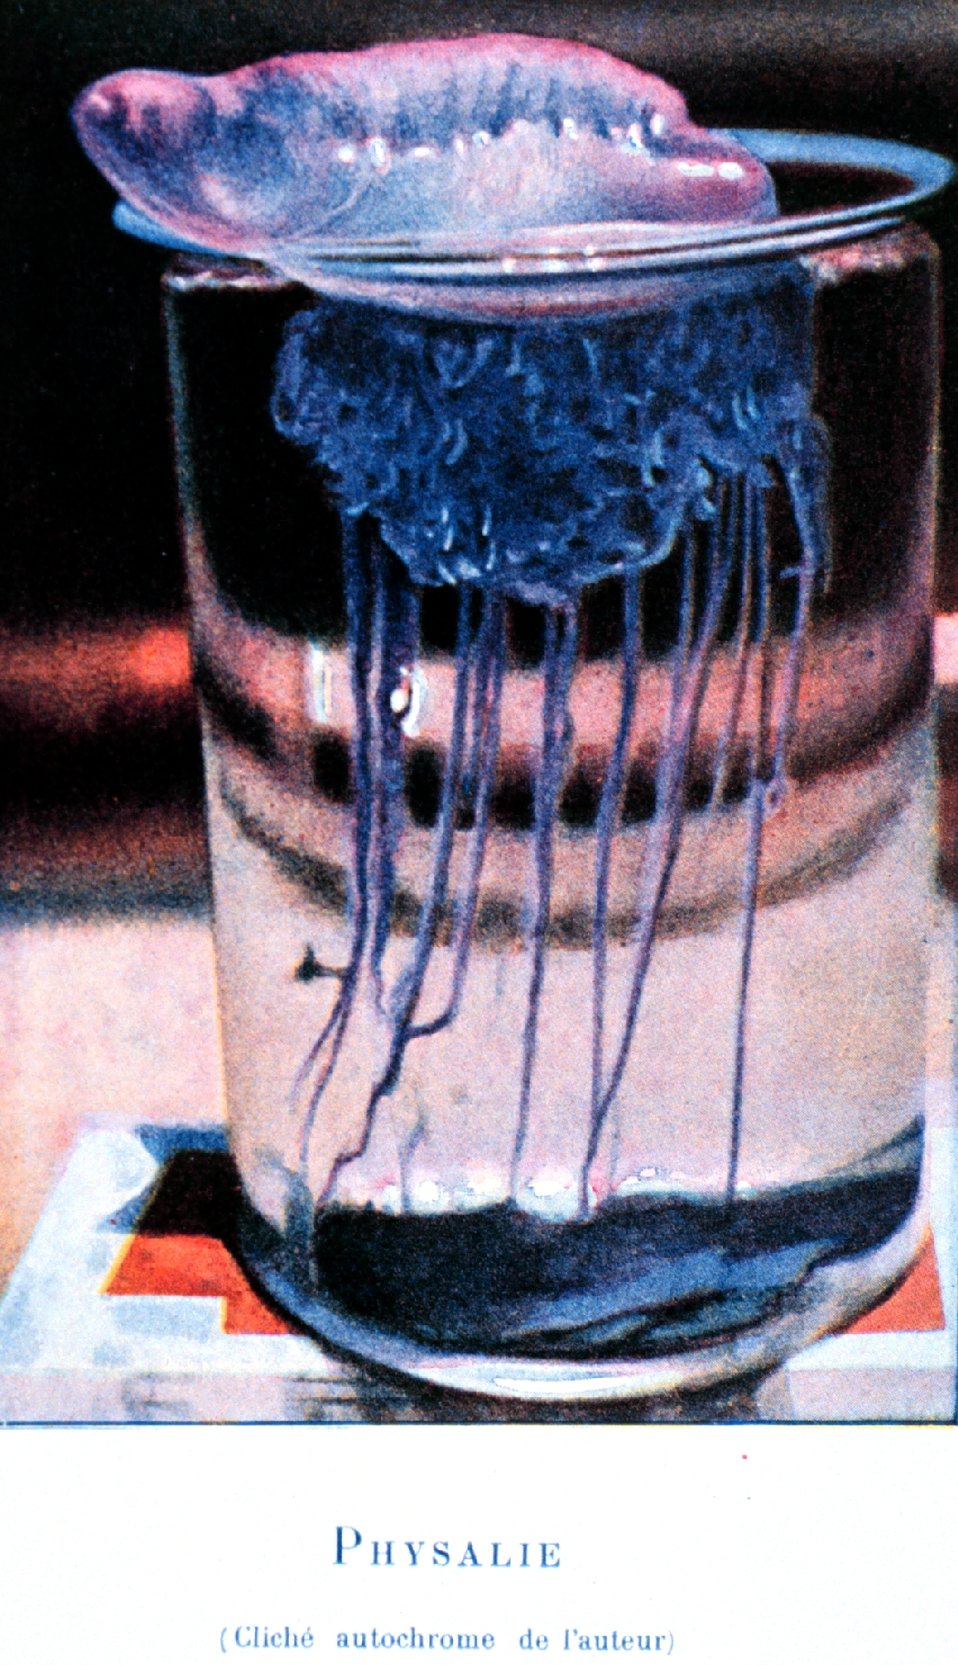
Physalia physalis - Portuguese Man of War. In: 'From the Surface to the Bottom of the Sea' by H. Bouree, 1912, p. 57. Library Call Number 525.8 B77.